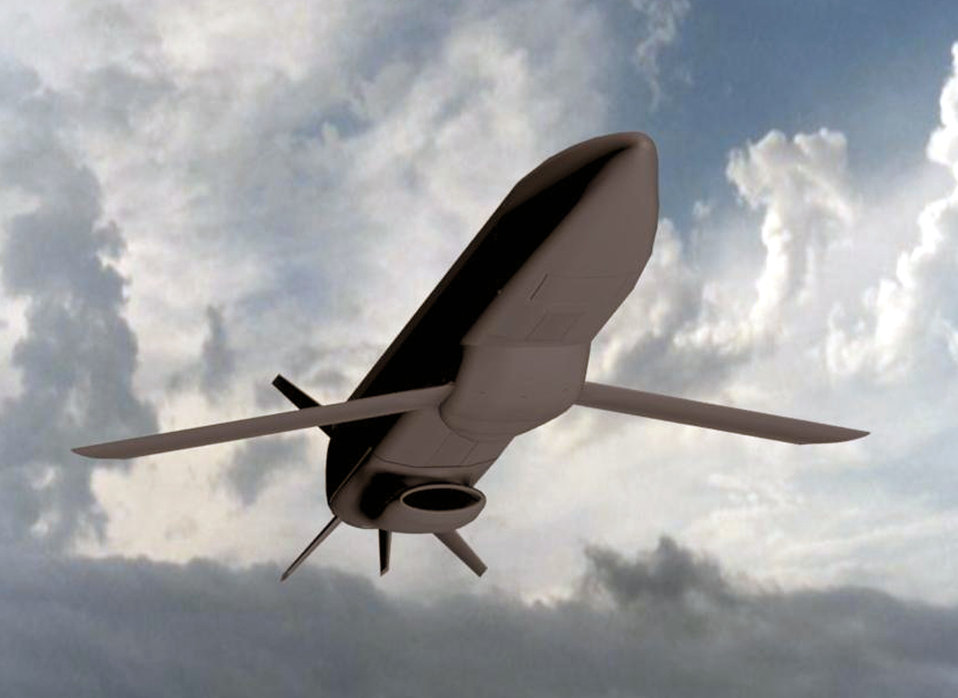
Mini decoy

COURTESY COMPUTER ILLUSTRATION -- The miniature air-launched decoy will be a small, cruise missile-like vehicle about 115 inches long, eight inches in diameter, with a 60-inch wingspan. It will weigh only 200 pounds and will be launched from both fighters and bombers.